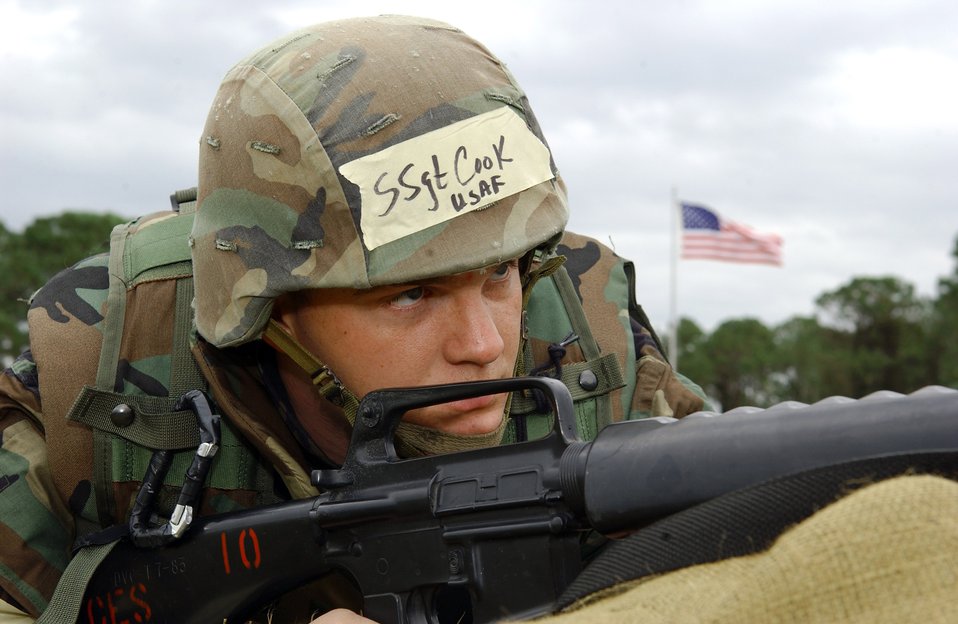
ATSO exercise

MACDILL AIR FORCE BASE, Fla. (AFPN) -- Staff Sgt. Joseph Cook guards his defensive fighting position during an ability to survive and operate exercise here. The exercise, held Dec. 7, trains Airman to survive and accomplish their mission under adverse combat conditions. Sergeant Cook is a security forces troop with the 6th Security Forces Squadron here.